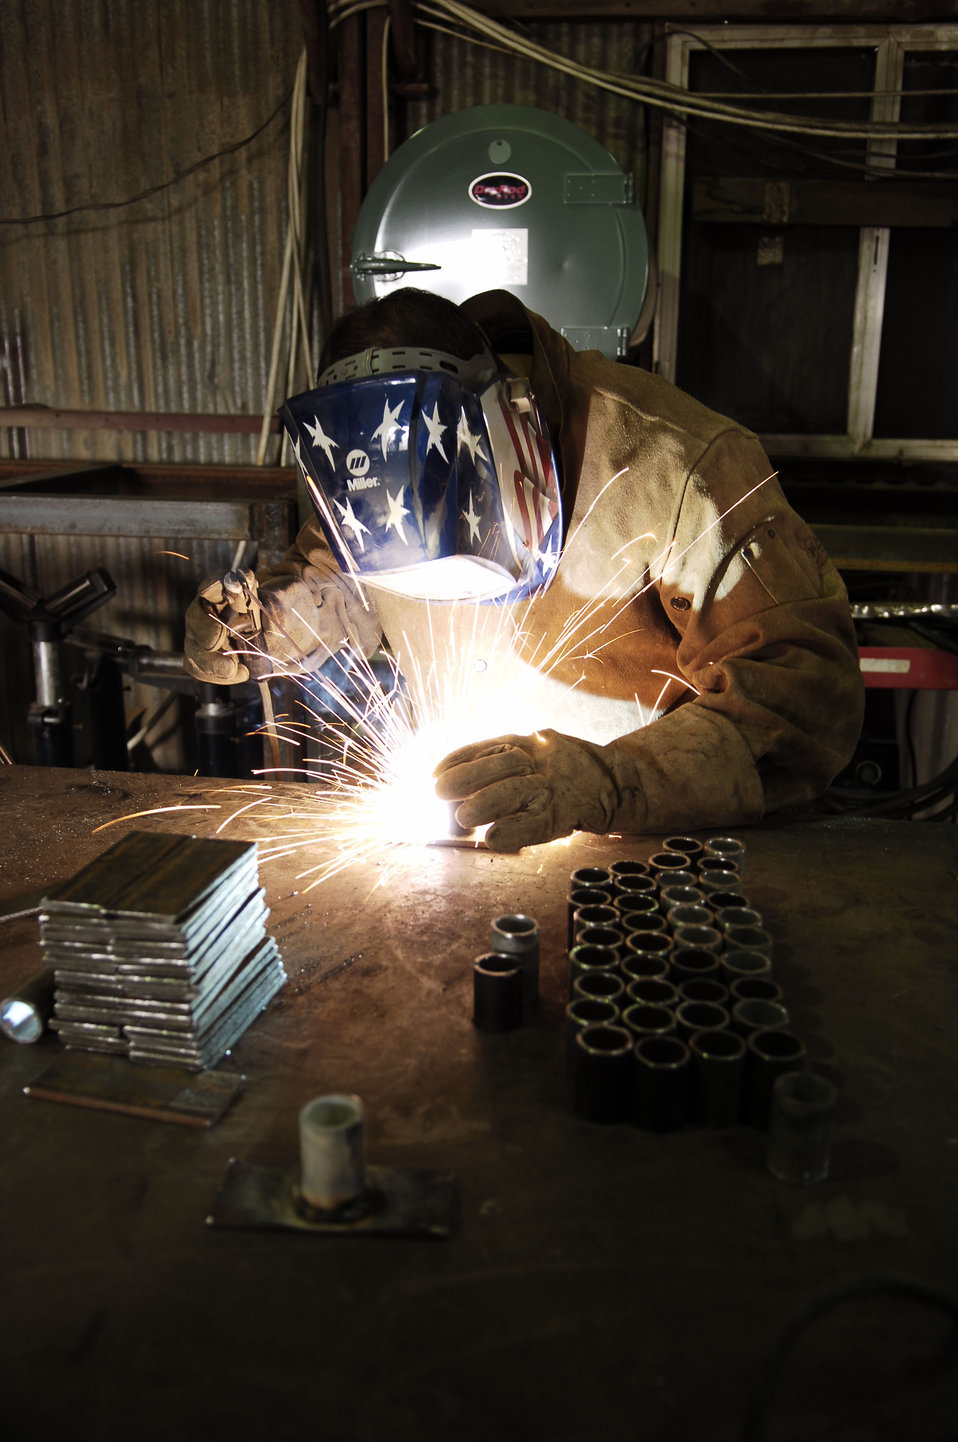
Working in a hot shop

Tech. Sergeant John Gallup fabricates shower rod holders for Air Force and Army living quarters March 8 at Kirkuk Regional Air Base, Iraq. Sergeant Gallup fabricates these and many other pieces of hardware that are vital to maintain the structures.